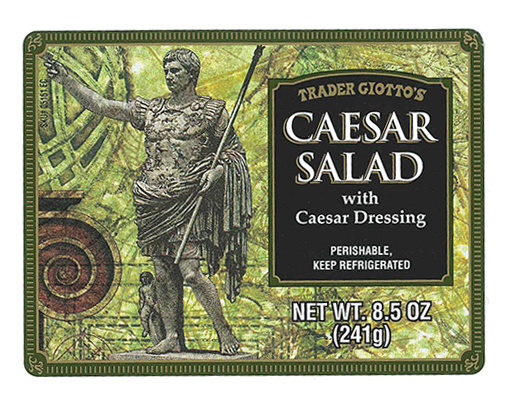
RECALLED – Caesar Salad with Caesar Dressing

April 7, 2014 – Product Recall – H Group, Inc. Issues Voluntary Allergen Alert on Undeclared Allergens in Caesar Salad with Caesar Dressing.